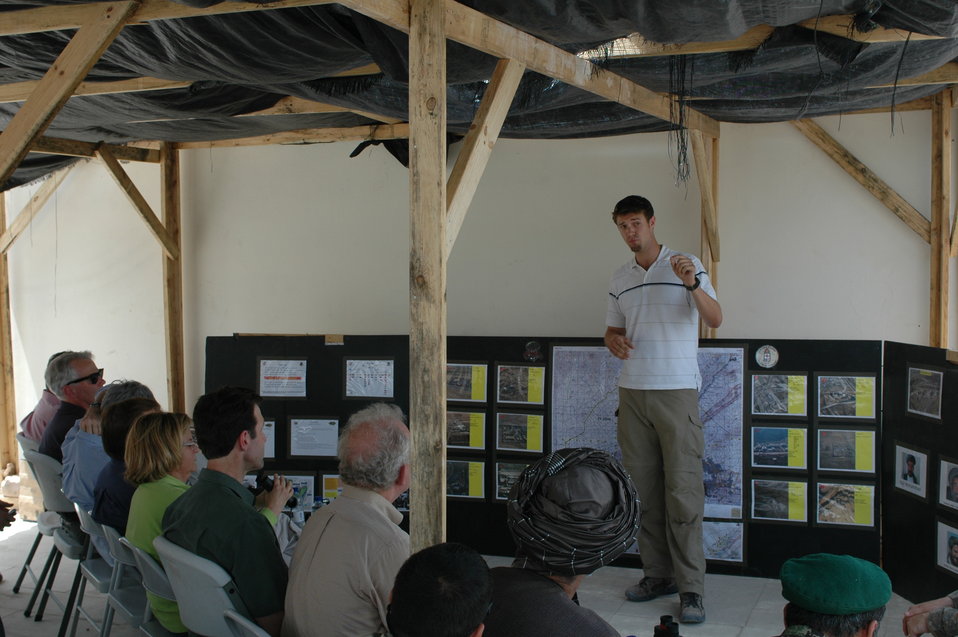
CODEL Berman